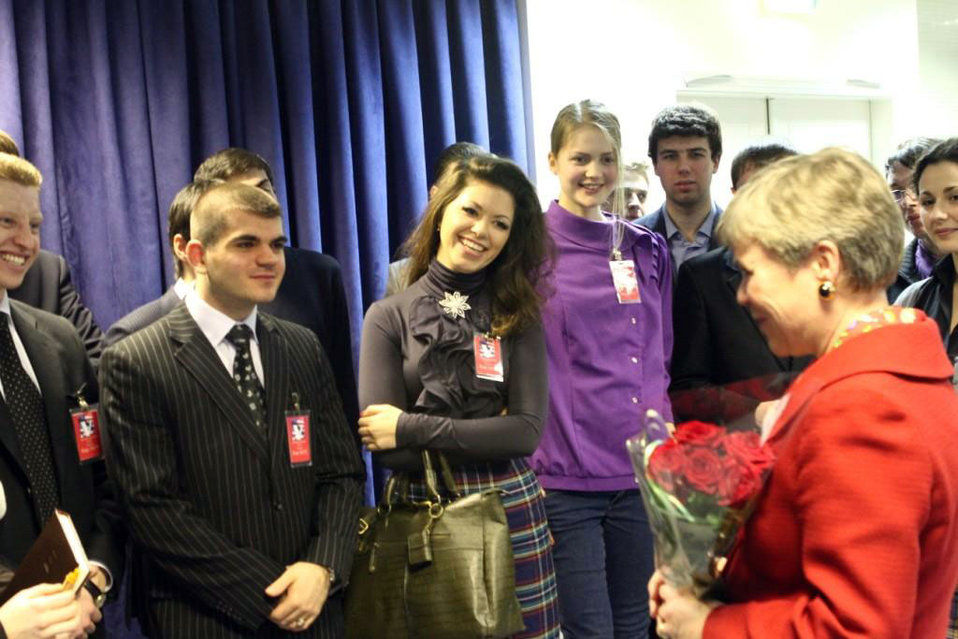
Assistant Secretary Gottemoeller Meets With Students

U.S. Assistant Secretary of State for the Bureau of Arms Control, Verification and Compliance Rose Gottemoeller meets with students in Kyiv, Ukraine, on February 7, 2011.